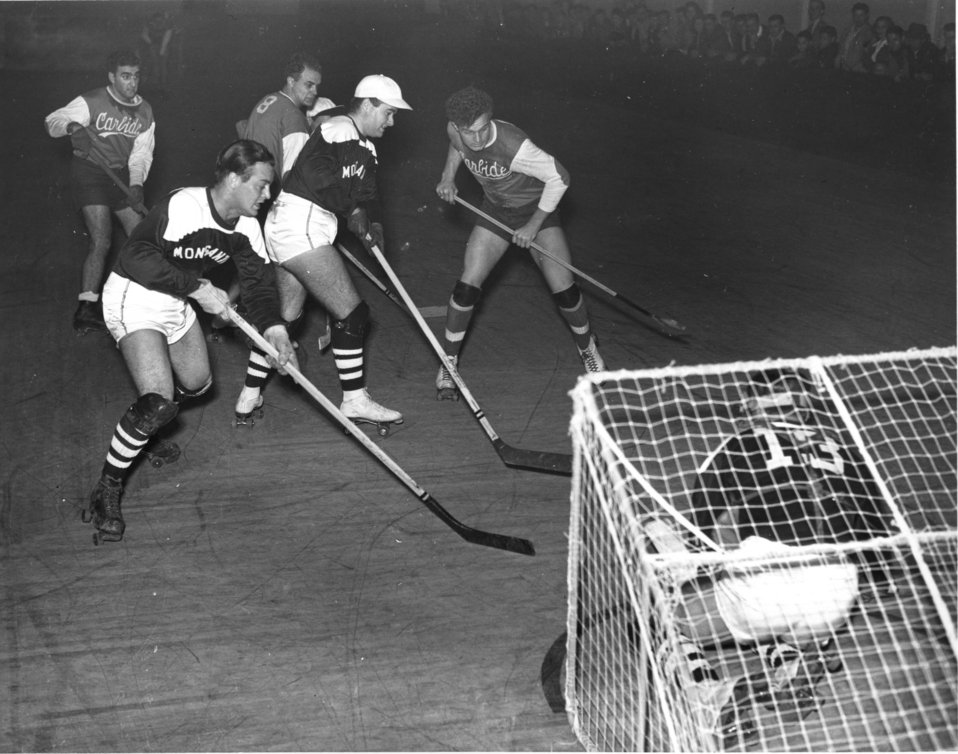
Recreation at Oak Ridge